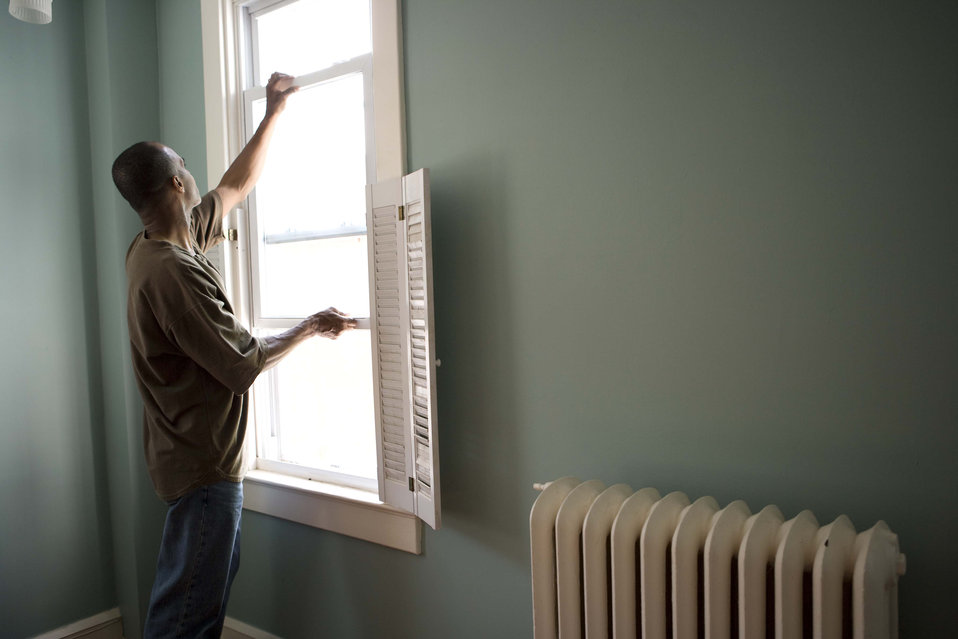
When renovating a home, you should use a damp sponge or cloth to clean dust collected on a window sill, as the dust may contain asbestos or lead-based paint. Home maintenance is an ongoing process for any homeowner, and here we see an African-American man as he was preparing a window in his home for a general cleaning.